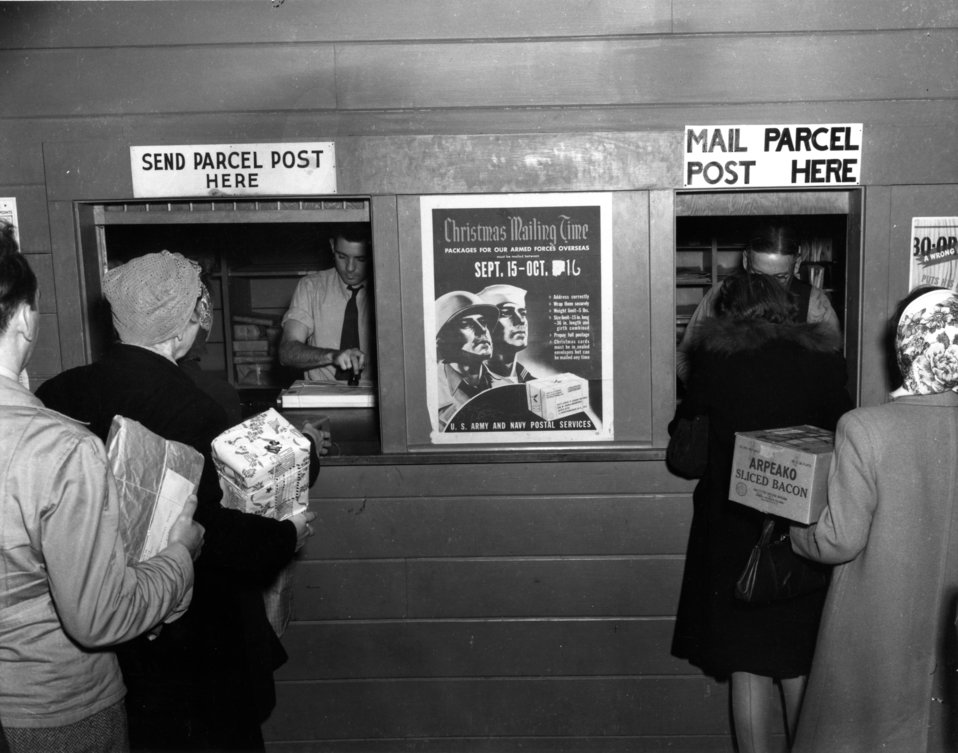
Daily Life at Oak Ridge